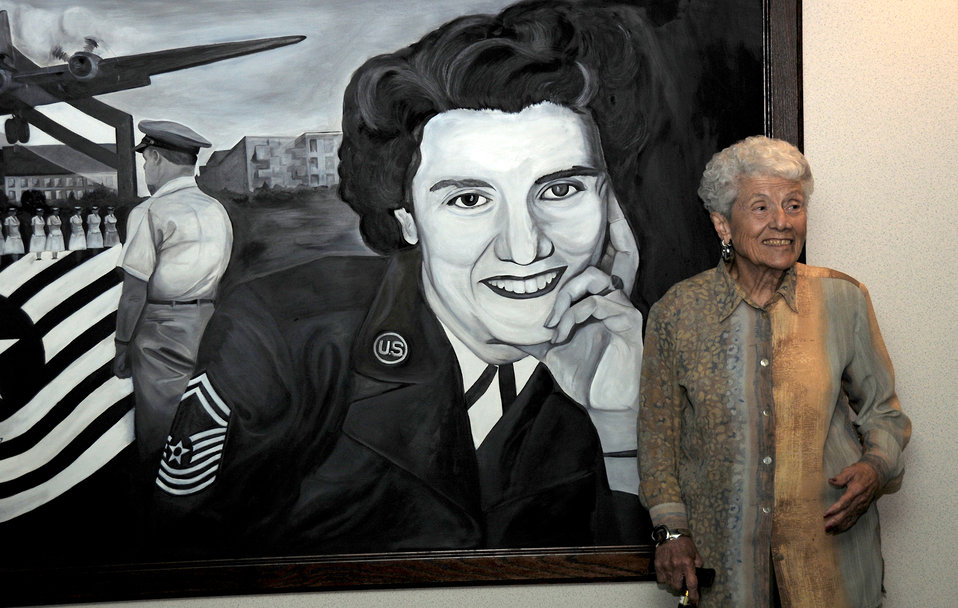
Expeditionary Center Airmen honor Air Force's first female chief

Retired Chief Master Sgt. Grace Peterson stands in front of a painting of herself in front of the Grace Peterson Hall at the U.S. Air Force Expeditionary Center Oct. 18, 2010, at Joint Base McGuire-Dix-Lakehurst, N.J. Chief Peterson was the first female Airman to be promoted to the Air Force's highest enlisted grade in 1960. She visited the U.S. Air Force Expeditionary Center to see the facility and the hall that bears her name.